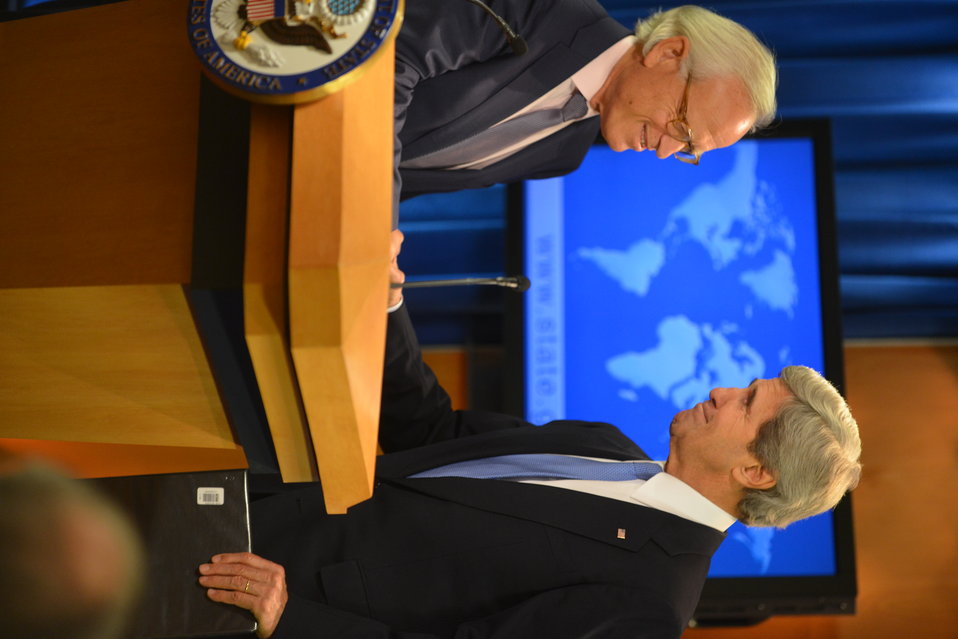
Secretary Kerry Shakes Hands With Ambassador Indyk

U.S. Secretary of State John Kerry shakes hands with Ambassador Martin Indyk after announcing that Ambassador Indyk will serve as the U.S. Special Envoy for Israeli-Palestinian Negotiations at the U.S. Department of State in Washington, D.C., on July 29, 2013.